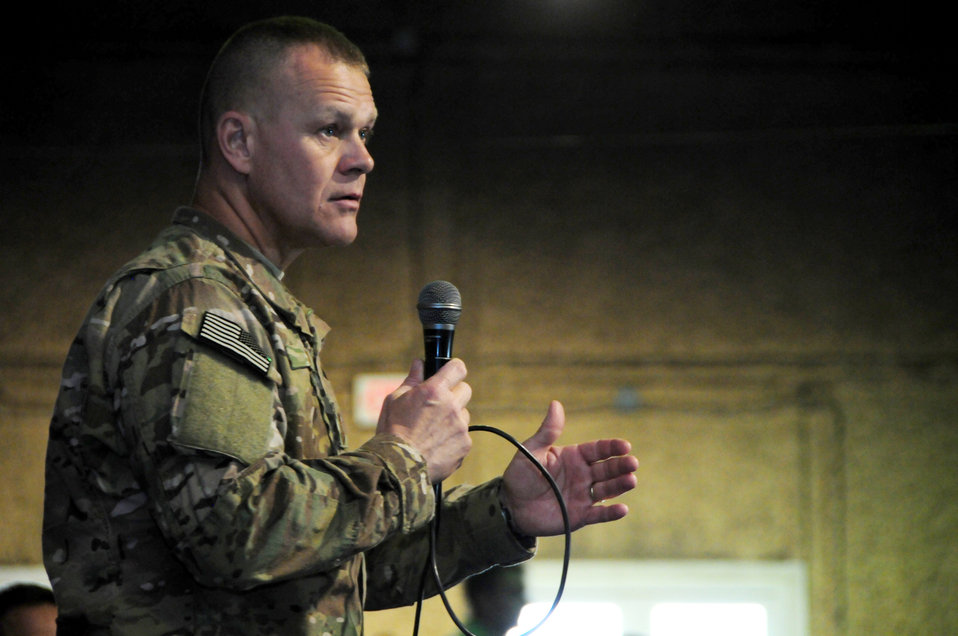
Chief Roy

Chief Master Sgt. of the Air Force James A. Roy speaks to Airmen June 17, 2011, at the Afghan air force compound in Kabul, Afghanistan.